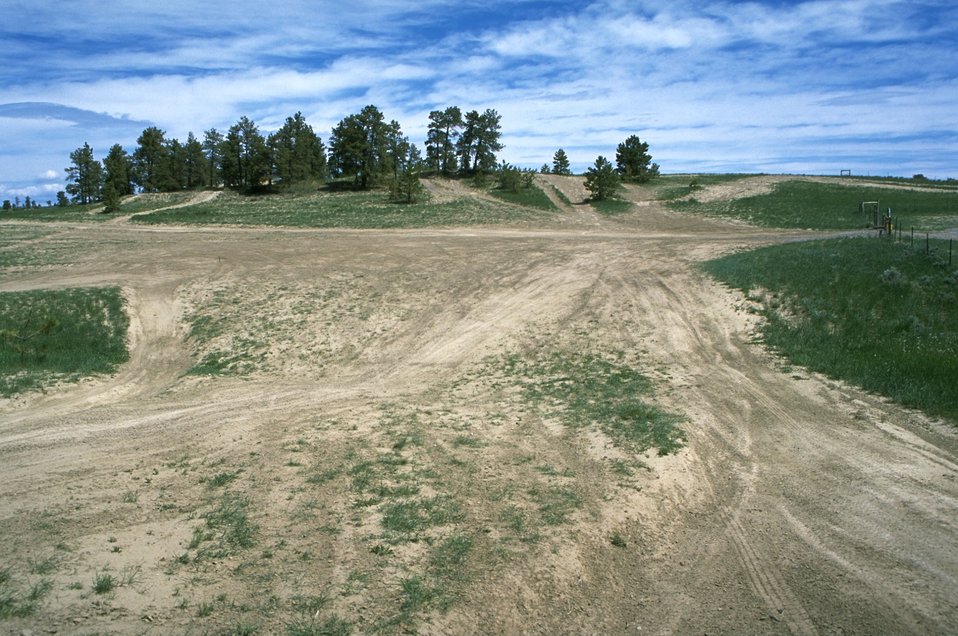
OHV trails in Area 1 in the Shepherd Recreation Area